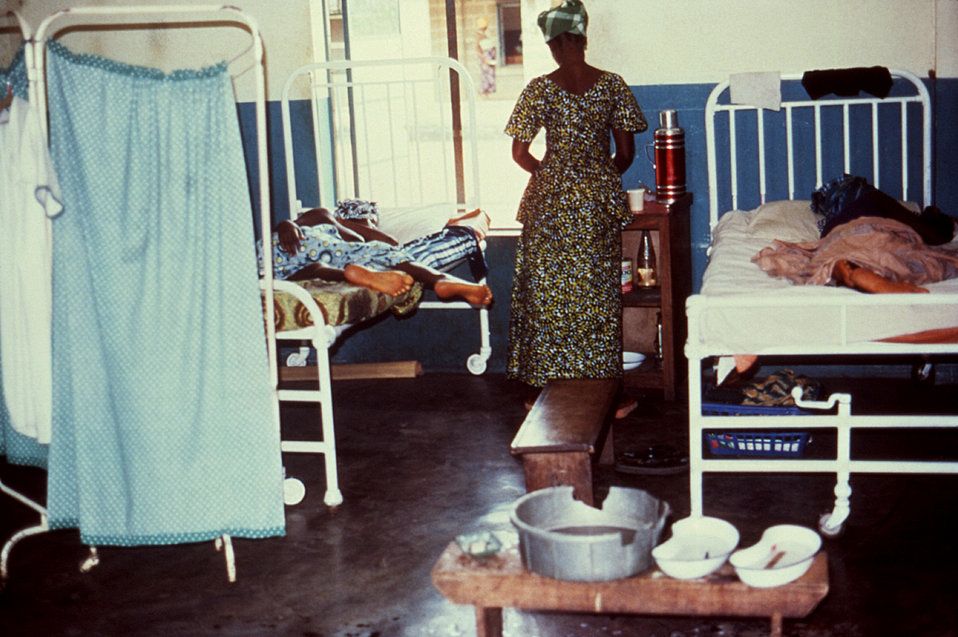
This 1977 image depicts recovering female Lassa fever patients in a Segbwema, Sierra Leone clinic.